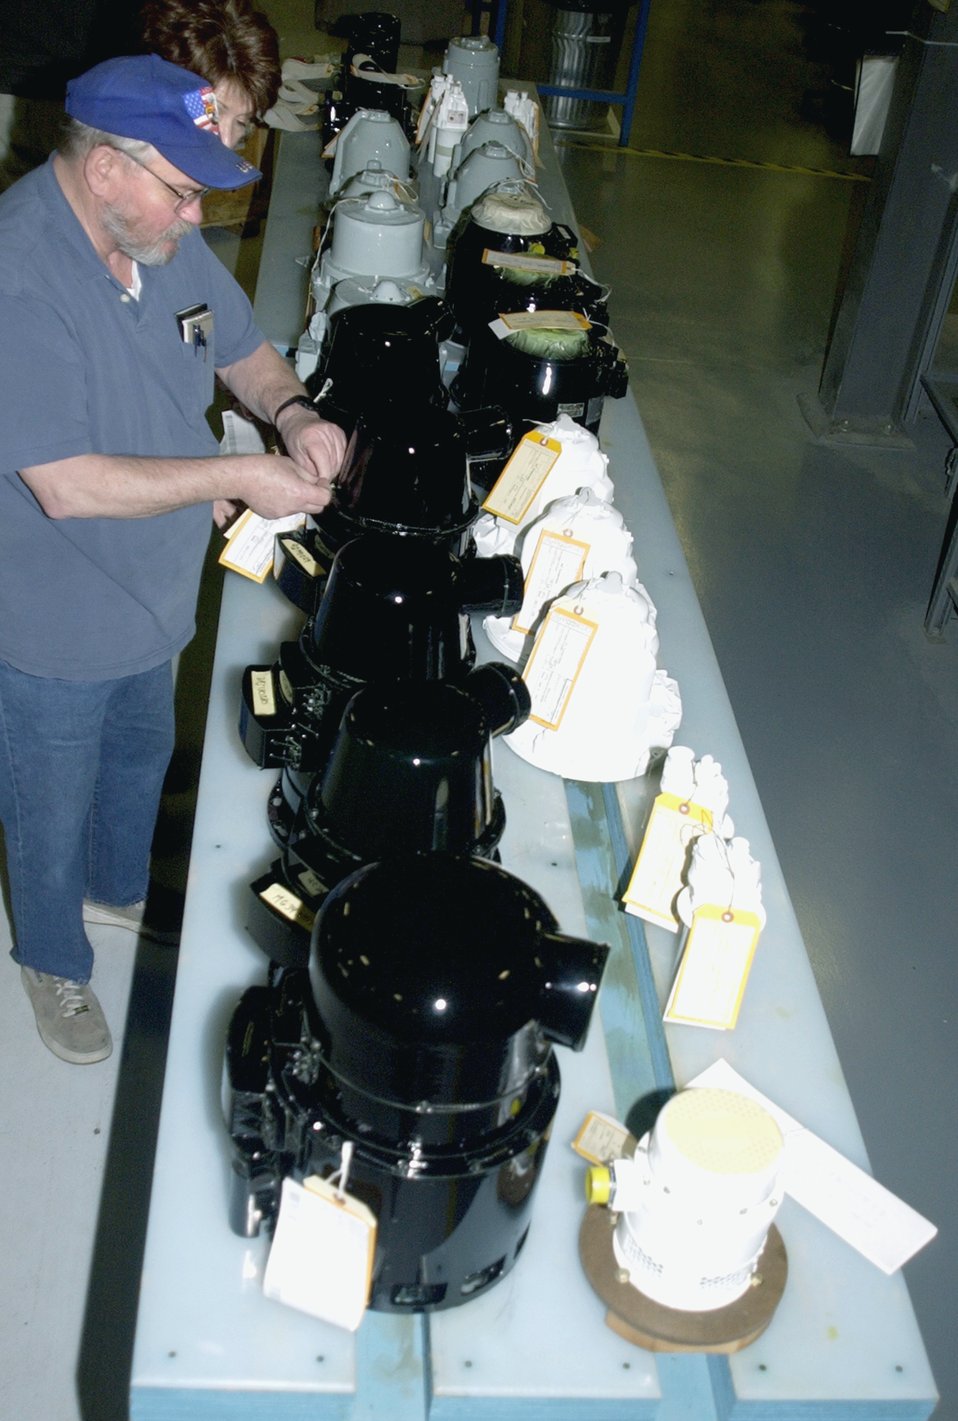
Creating power behind airpower

HILL AIR FORCE BASE, Utah -- Rows of finished products are tagged by employees before being shipped to their new aircraft. Workers of the 309th Generator Squadron's airborne flight restore more than 4,200 aircraft generators a year.